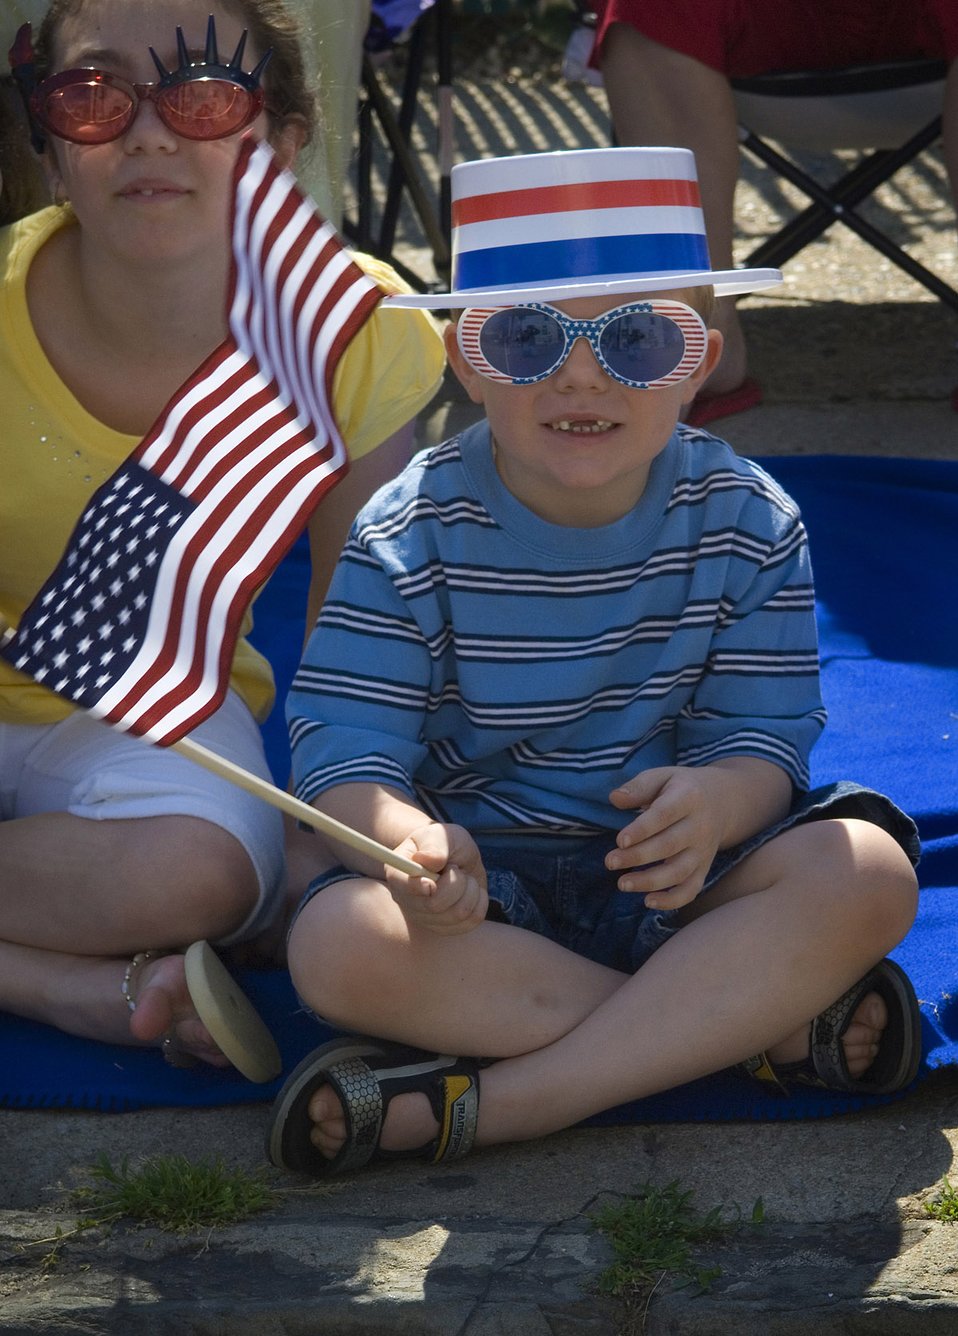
Philly Air Force Week

Bill Keiper, 5, sits waiting to cheer on the Bridesburg Memorial Day Parade May 26. Bridesburg is a borough in Philadelphia and hosted the kickoff celebrations for Air Force Week Philadelphia. Air Force Week Philadelphia is an event designed to build new relationships in the Philadelphia metropolitan area and strengthen public support for the Air Force mission and Airmen serving worldwide in the war on terrorism.